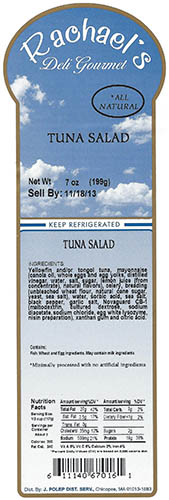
RECALLED – Prepared salads

October 24, 2013 – Product Recall – Boston Salads and Prepared Foods Recalling Ready-To-Eat Products Because of Possible Health Risk.